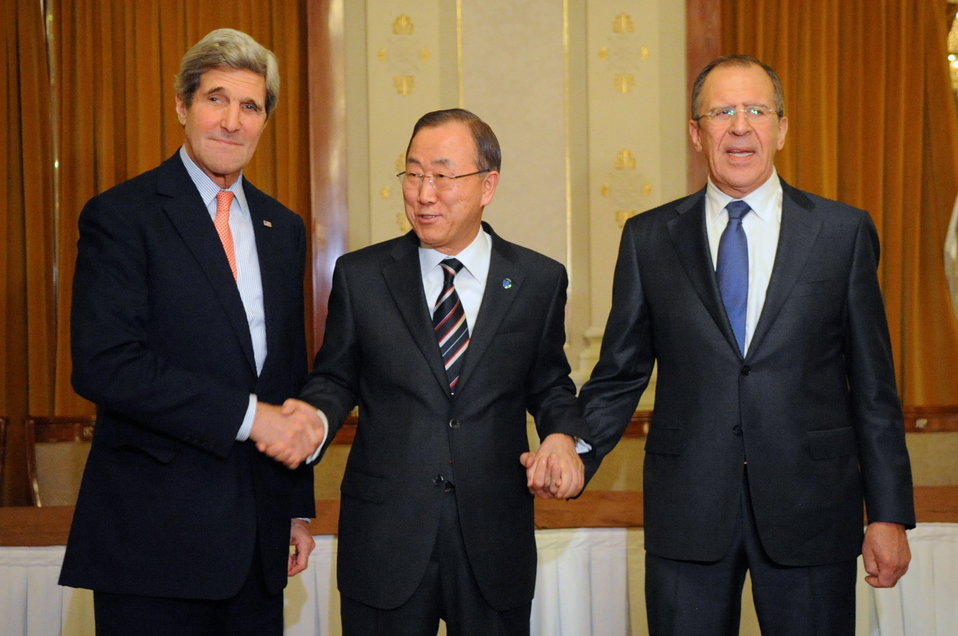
Secretary Kerry, Foreign Minister Lavrov Meet With Secretary-General Ban

U.S. Secretary of State John Kerry and Russian Foreign Minister Sergey Lavrov shake hands with United Nations Secretary-General Ban Ki-moon on January 21, 2014, in Montreux, Switzerland, before the start of talks focused on reaching a negotiated political settlement in Syria.